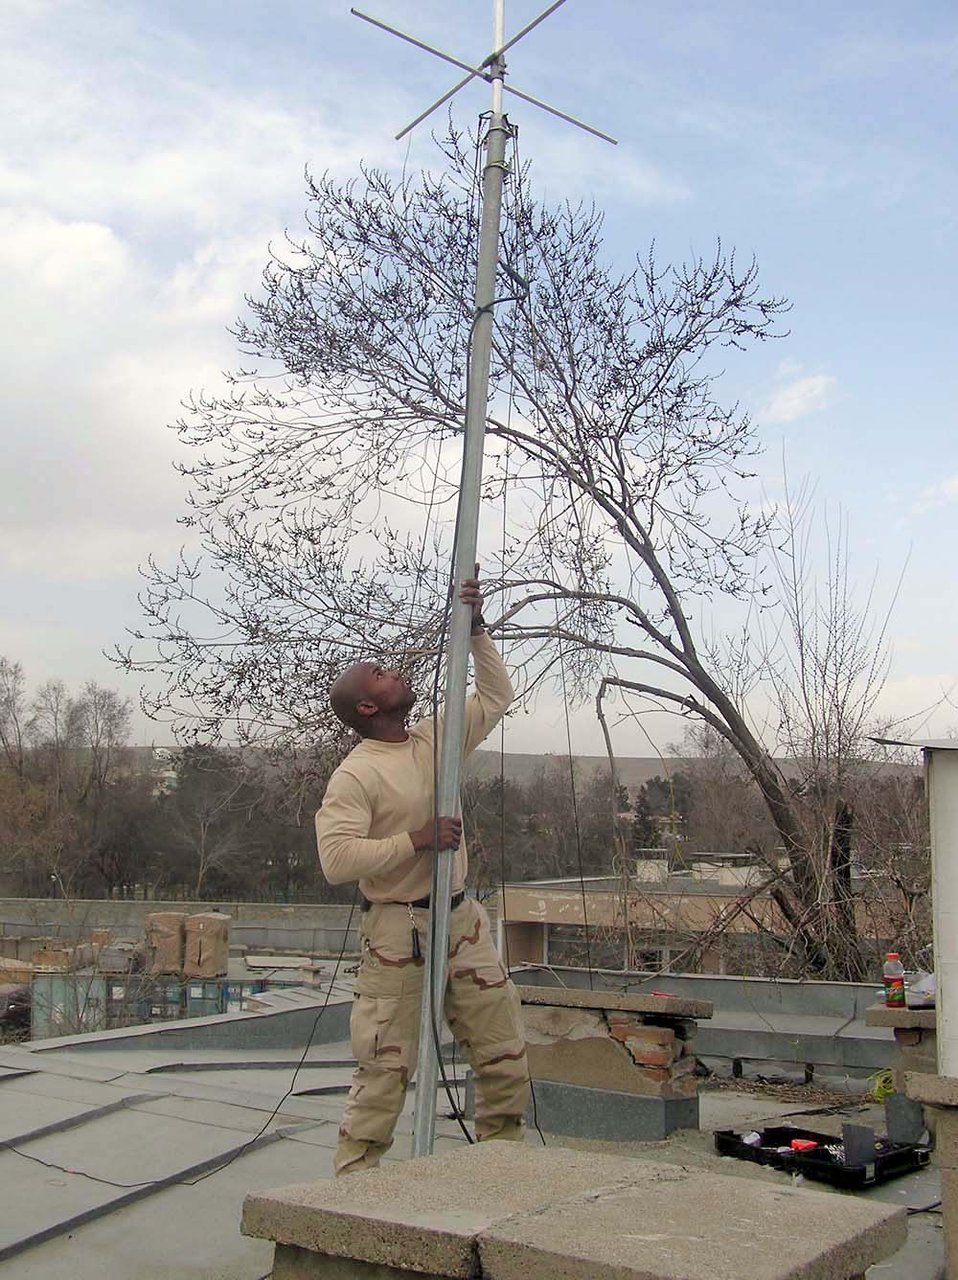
Tuning in

KABUL, Afghanistan -- Staff Sgt. Andre Locust mounts an antenna for the local Army's Criminal Investigative Division. His work expanded radio communications in the area by up to 10 miles and enhanced operational security for U.S. forces working here. Sergeant Locust is a ground-radio technician with the 455th Expeditionary Operations Group at Bagram Air Base, Afghanistan.